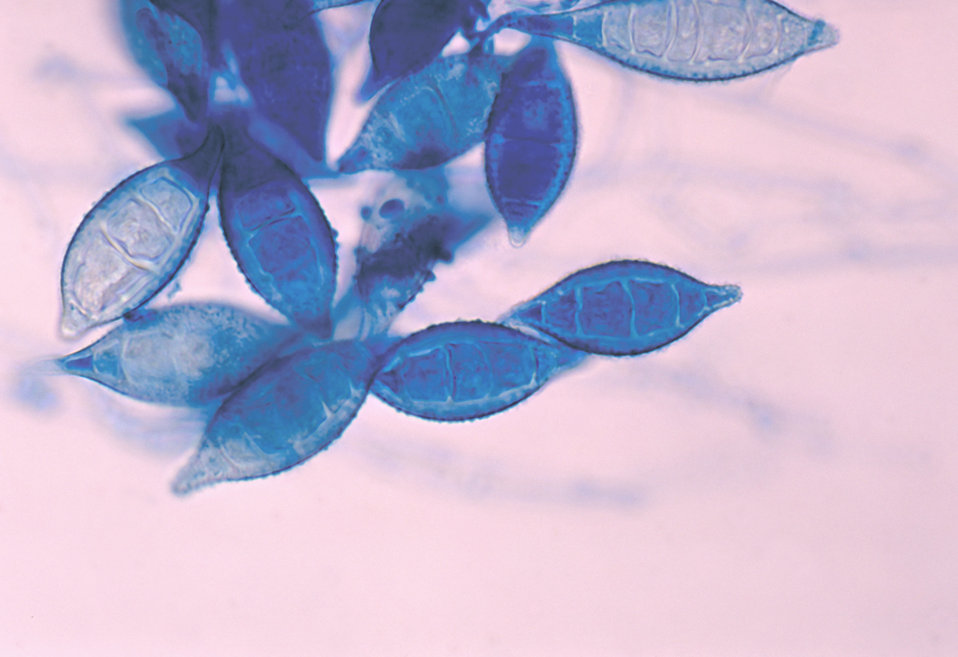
This photomicrograph shows a number of Arthroderma otae, formerly Nannizzia otae, fungal macroconidia.